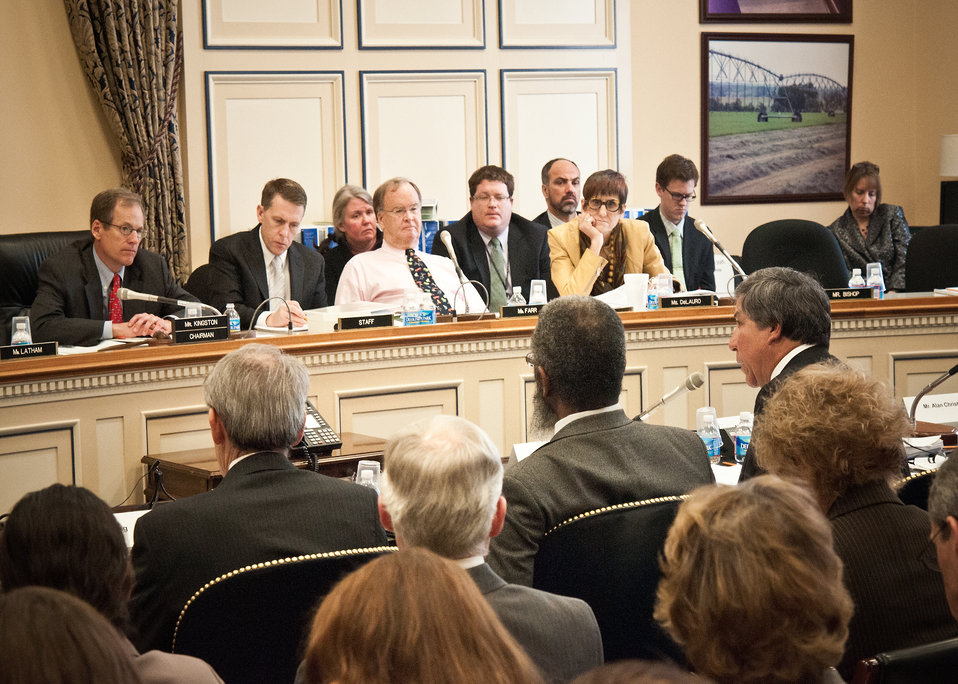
Congressman Jack Kingston, Georgia, Chairman of the House Agriculture Appropriations Committee poses questions to Ed Avalos, Under Secretary, Marketing and Regulatory Programs along with representatives of the other Marketing and Regulatory Program agencies testifying on Capitol Hill before the House Agriculture Appropriations Subcommittee on the agencies fiscal year 2013 budget requests in Washington, D.C., Tuesday, March 6, 2012.